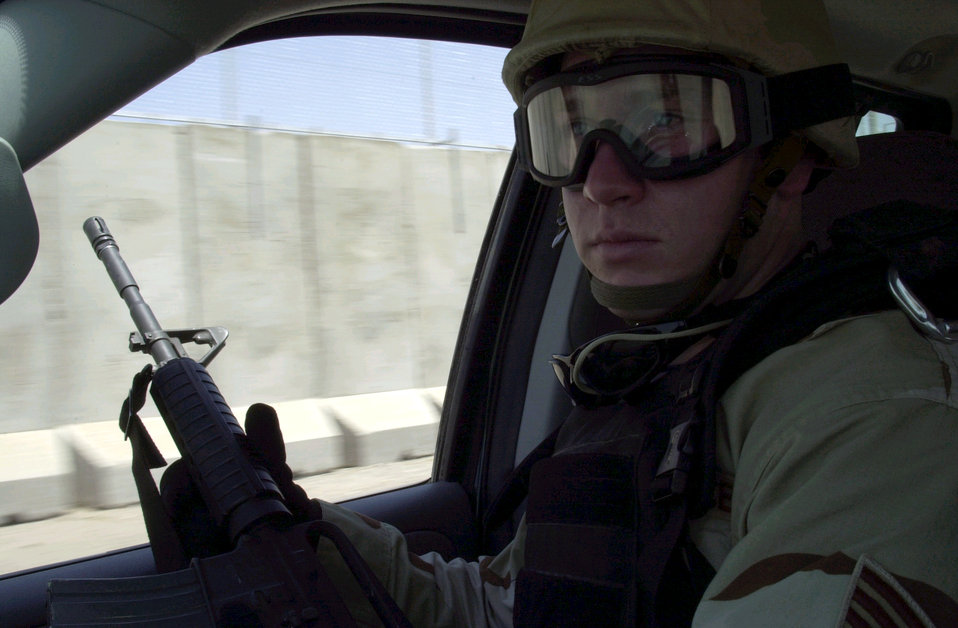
On alert

BAGHDAD, Iraq -- U.S. Air Force Staff Sgt. Nat Lett keeps a sharp eye out as he makes his way back to the international zone Baghdad from Camp Victory in a non-tactical vehicle here July 20.